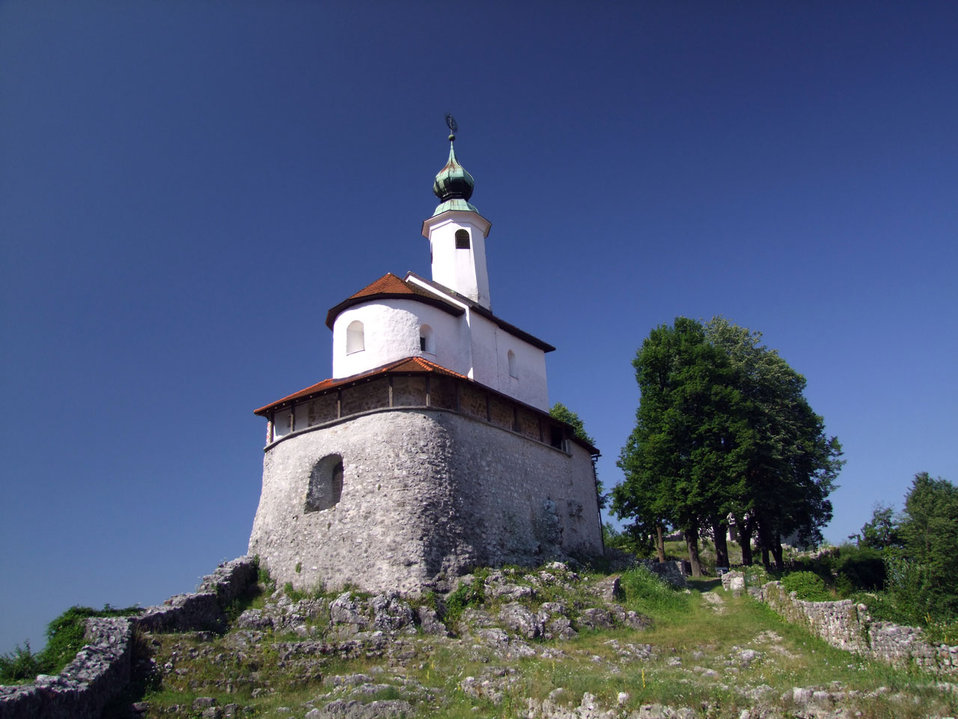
Mali grad church

This beauty is located in the middle of medieval city of kamnik on hill called .